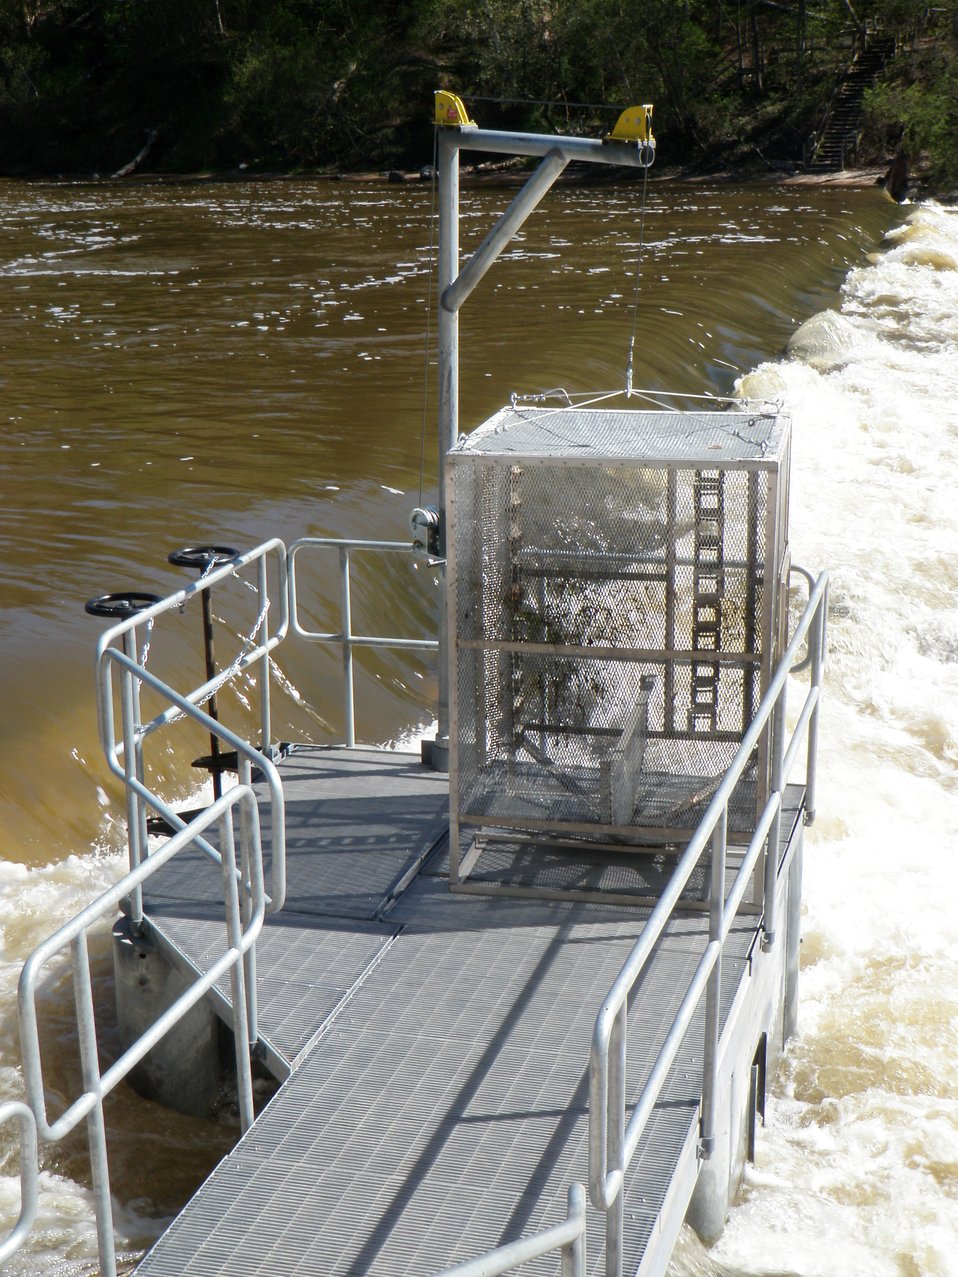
Big Manistee River Trap with Insert Raised in Michigan.